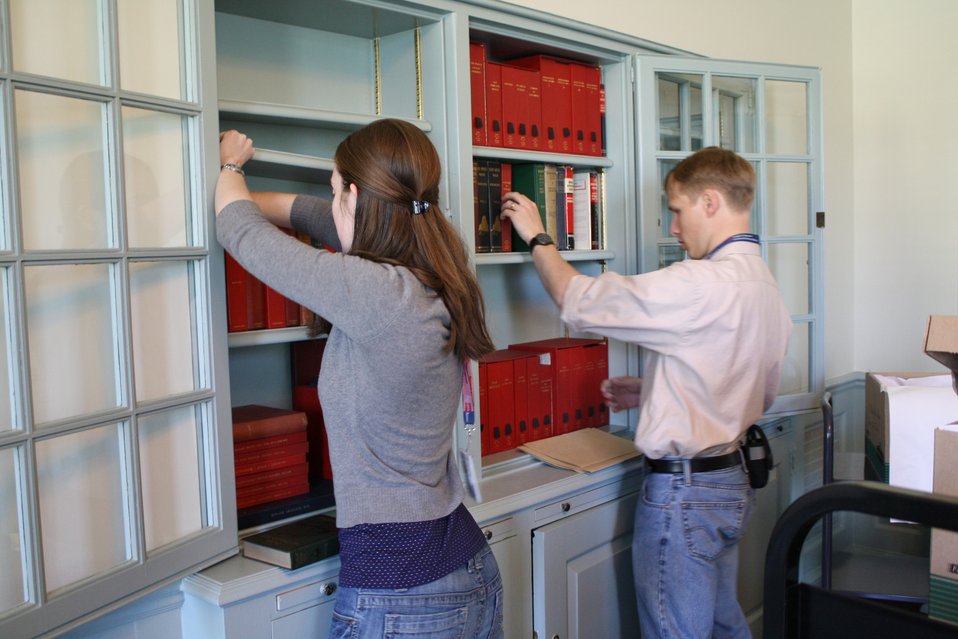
Sarah Malcolm and Bill Baehr work on returning FDR’s books to his Library study after the Library’s 3 year renovation.; Location: Franklin D. Roosevelt Presidential Library, Hyde Park, New York